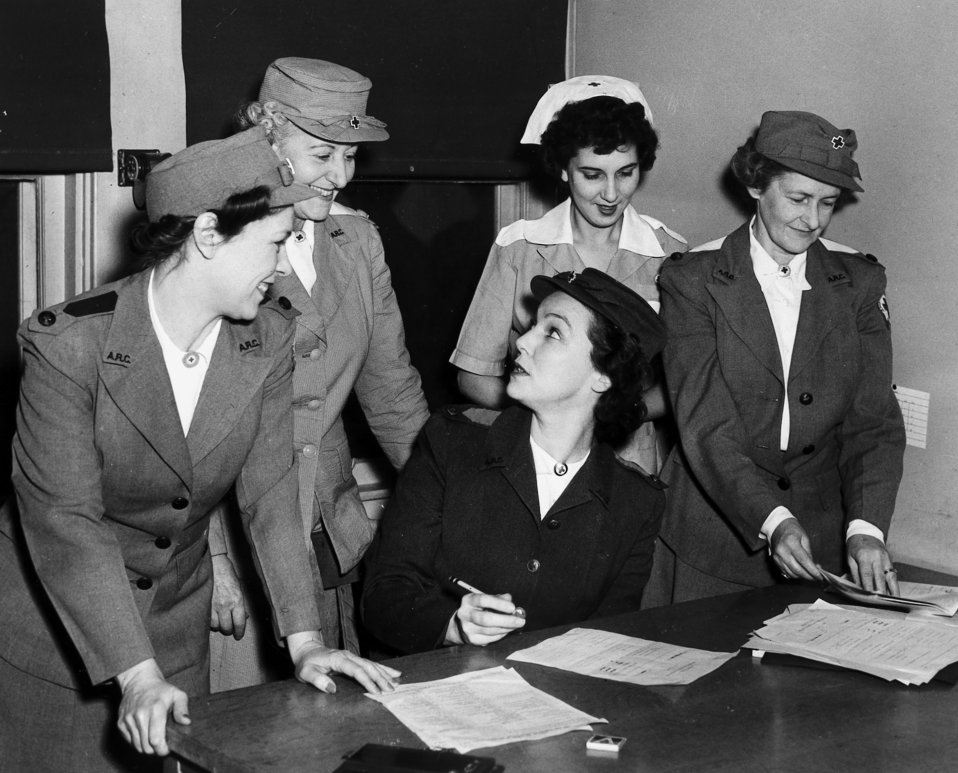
Red Cross Oak Ridge

pro 160 DOE photo by Ed Westcott 12/7/44
Oak Ridge Tennessee